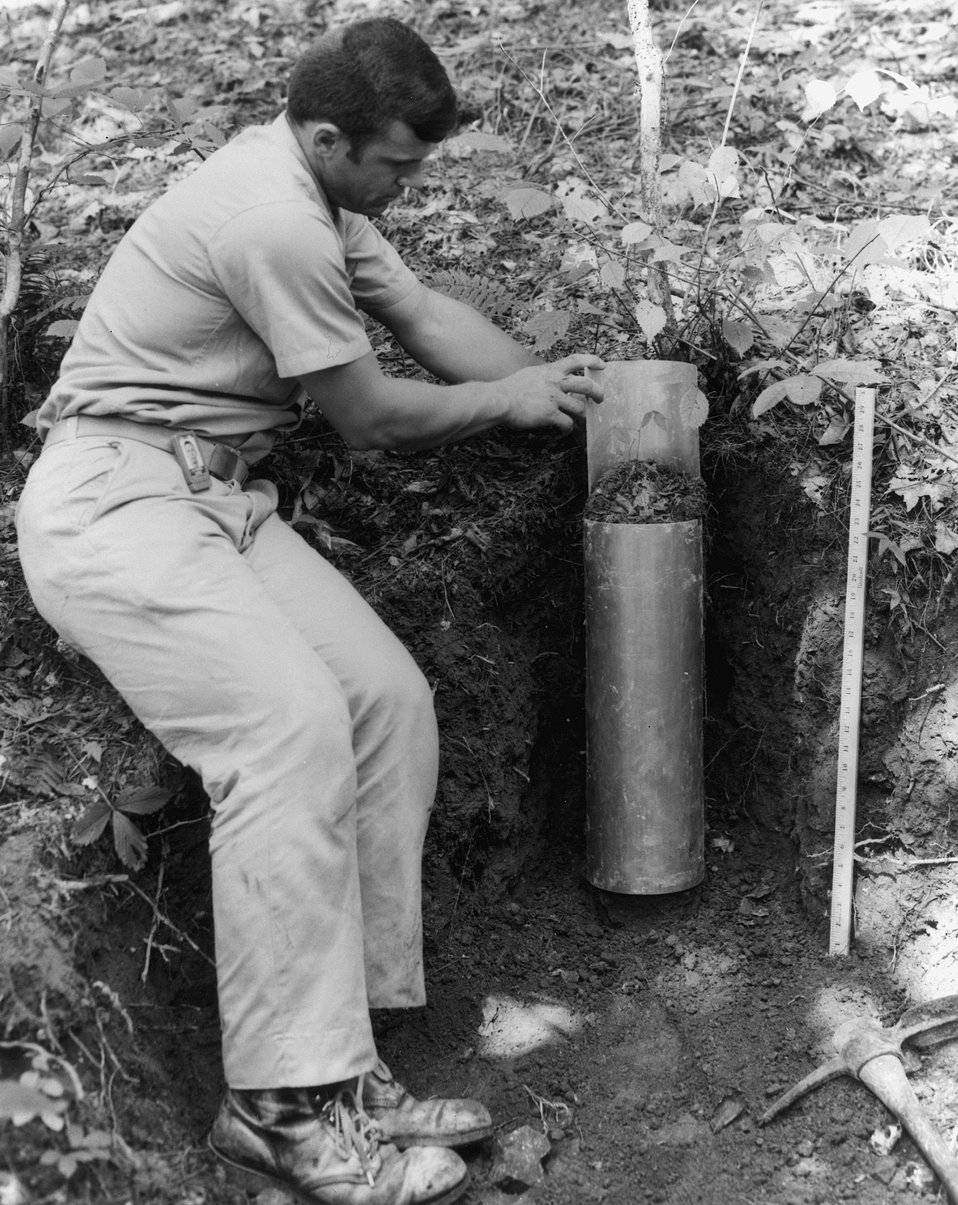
Soil sampling being conducted in Walker Branch Watershed. c. 1973